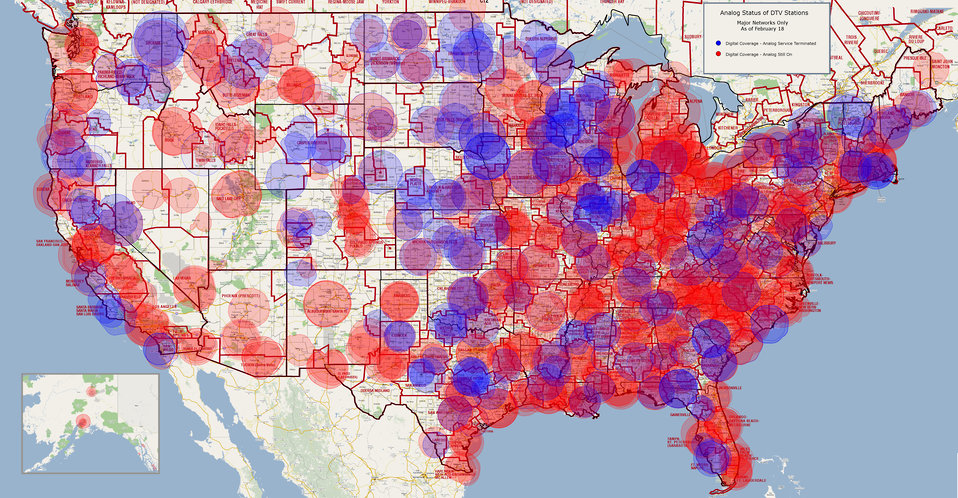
Whole US June 12